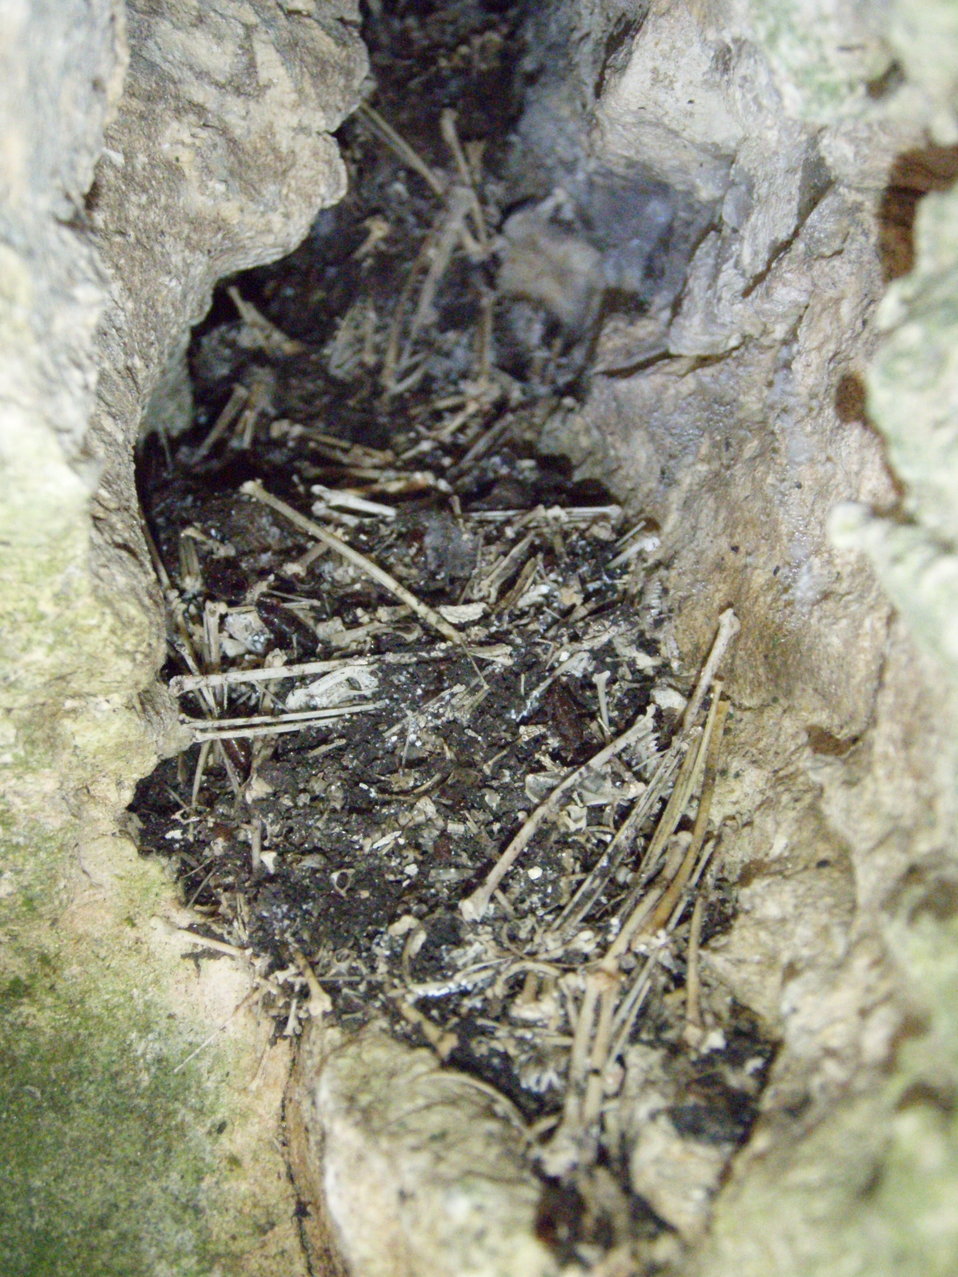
Bat bones pack crevices outside Aeolus Cave

Bat bones pack crevices in limestone bluffs outside of Aeolus Cave, a WNS site in Vermont.